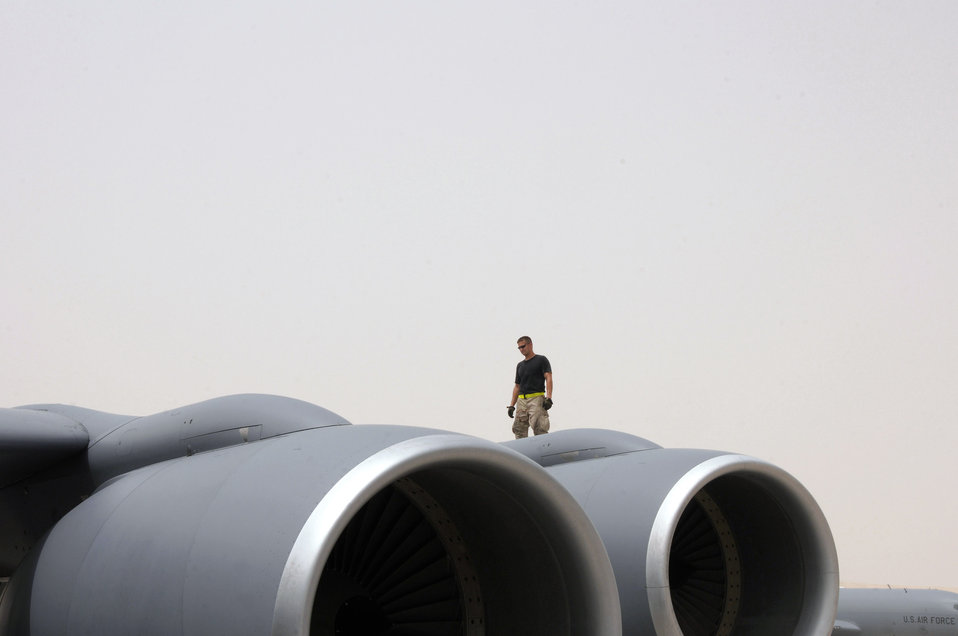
Gas and go

Tech. Sgt. Jim Erickson walks on the wing of a KC-135 Stratotanker as part of a post-flight maintenance inspection Aug. 3 at a Southwest Asia air base. Sergeant Erickson checks for any maintenance issues that need to be addressed before the aircraft can fly its next mission. Members of the 340th Expeditionary Aircraft Maintenance Squadron refuel all types of bombers, fighters and other support aircraft engaged in operations Iraqi Freedom and Enduring Freedom and Combined Joint Task Force Horn of Africa. Sergeant Erickson is a 340th EAXMS crew chief from Grand Forks Air Force Base, N.D.